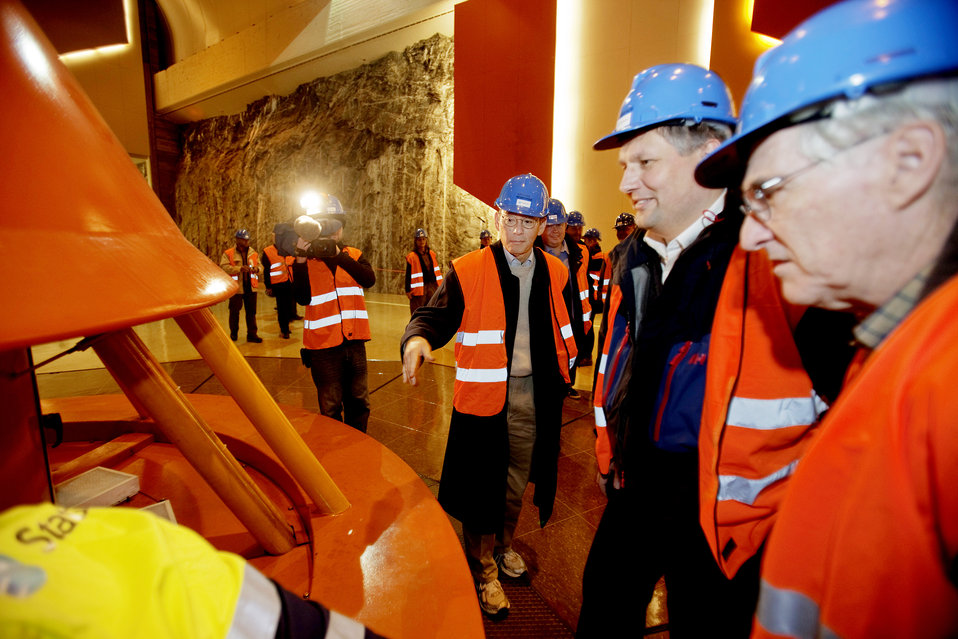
Saurdal

KVILLDAL 20091212.
Olje- og energiminister, Terje Riis-Johansen og USAs energiminister Stephen Chu fikk lørdag omvisning på Ulla-Førre anlegget, Norges største kraftstasjon.
Foto: Stian Lysberg Solum / Scanpix